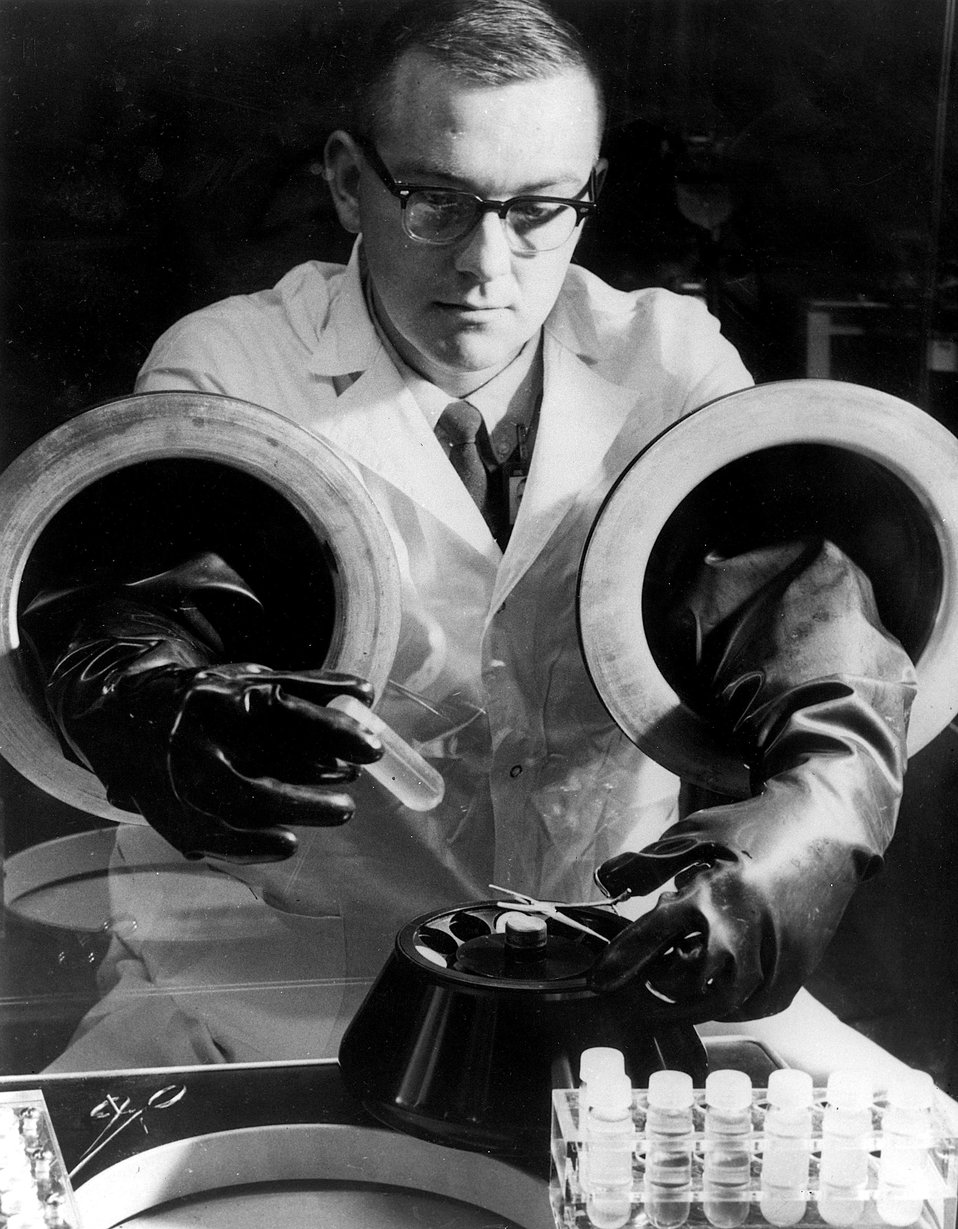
A biologist prepares anti-cold vaccines for experimentation in a virus isolation facility at the Oak Ridge Gaseous Diffusion Plant. Circa 1966.